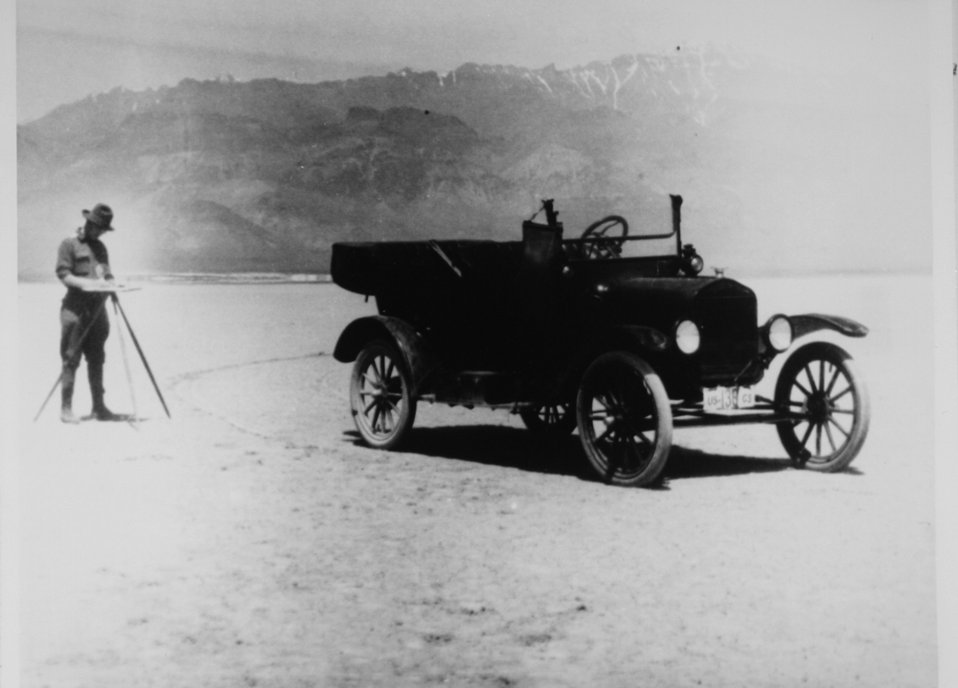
Alvord Desert 1918. USGS Cadstral Survey. Note the license plate.